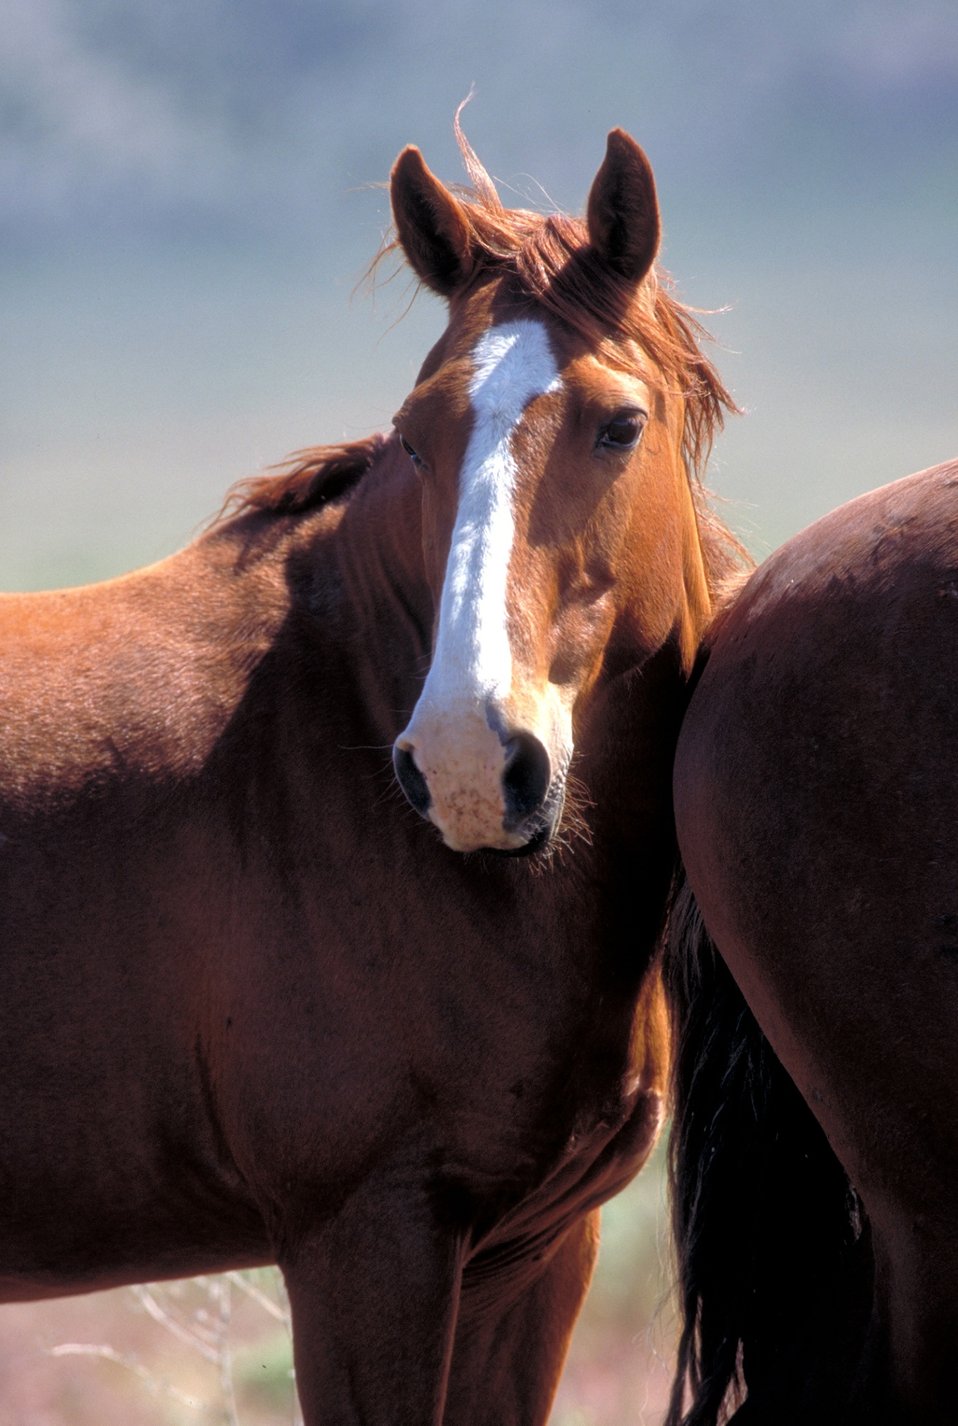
Onaqui Herd near Dugway, Utah.